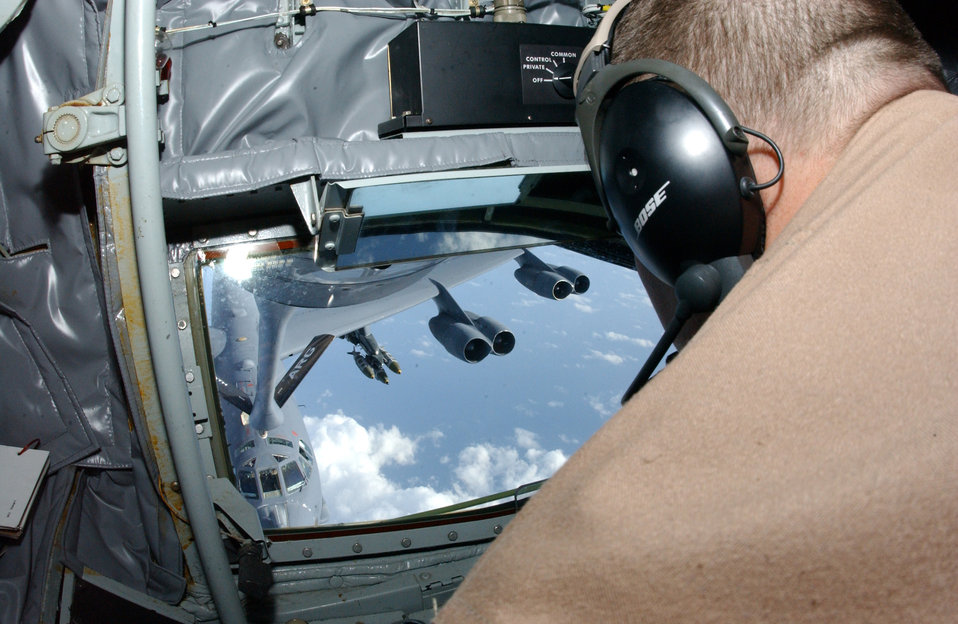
Operation Enduring Freedom and Operation Iraqi Freedom

OPERATION ENDURING FREEDOM -- Senior Airman William Paull, a boom operator on a KC-135 Stratotanker, refuels a B-52 Stratofortress over a forward-deployed location July 25. Senior Airman Paull is deployed to the 28th Expeditionary Refueling Squadron from the 911th Air Refueling Squadron at Grand Forks Air Force Base, N.D.